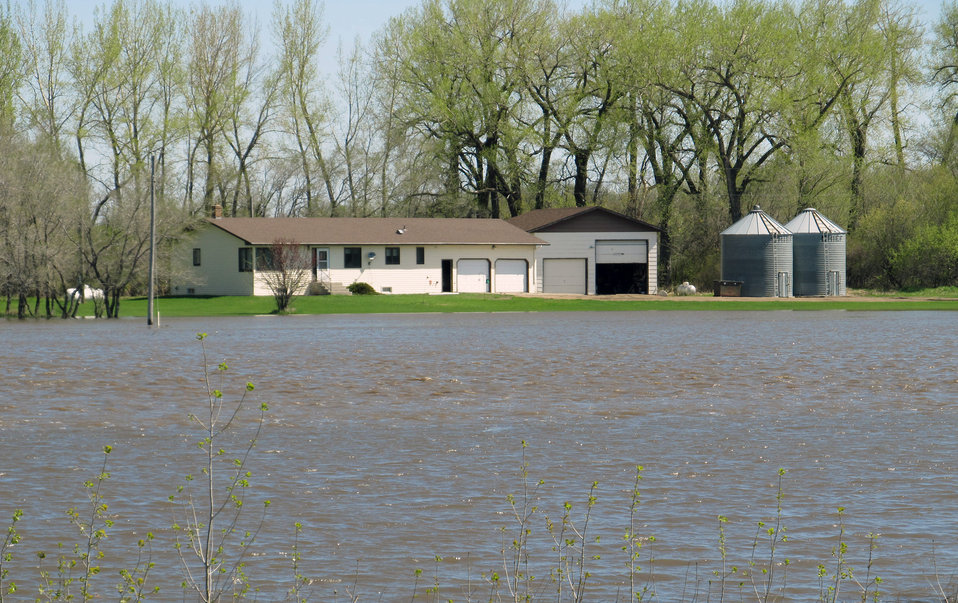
Flooding and water damage in the Park and Tongue River Watersheds located in Cavalier, Pembina and Cavalaier Counties in ND on Thursday, May 23, 2013.